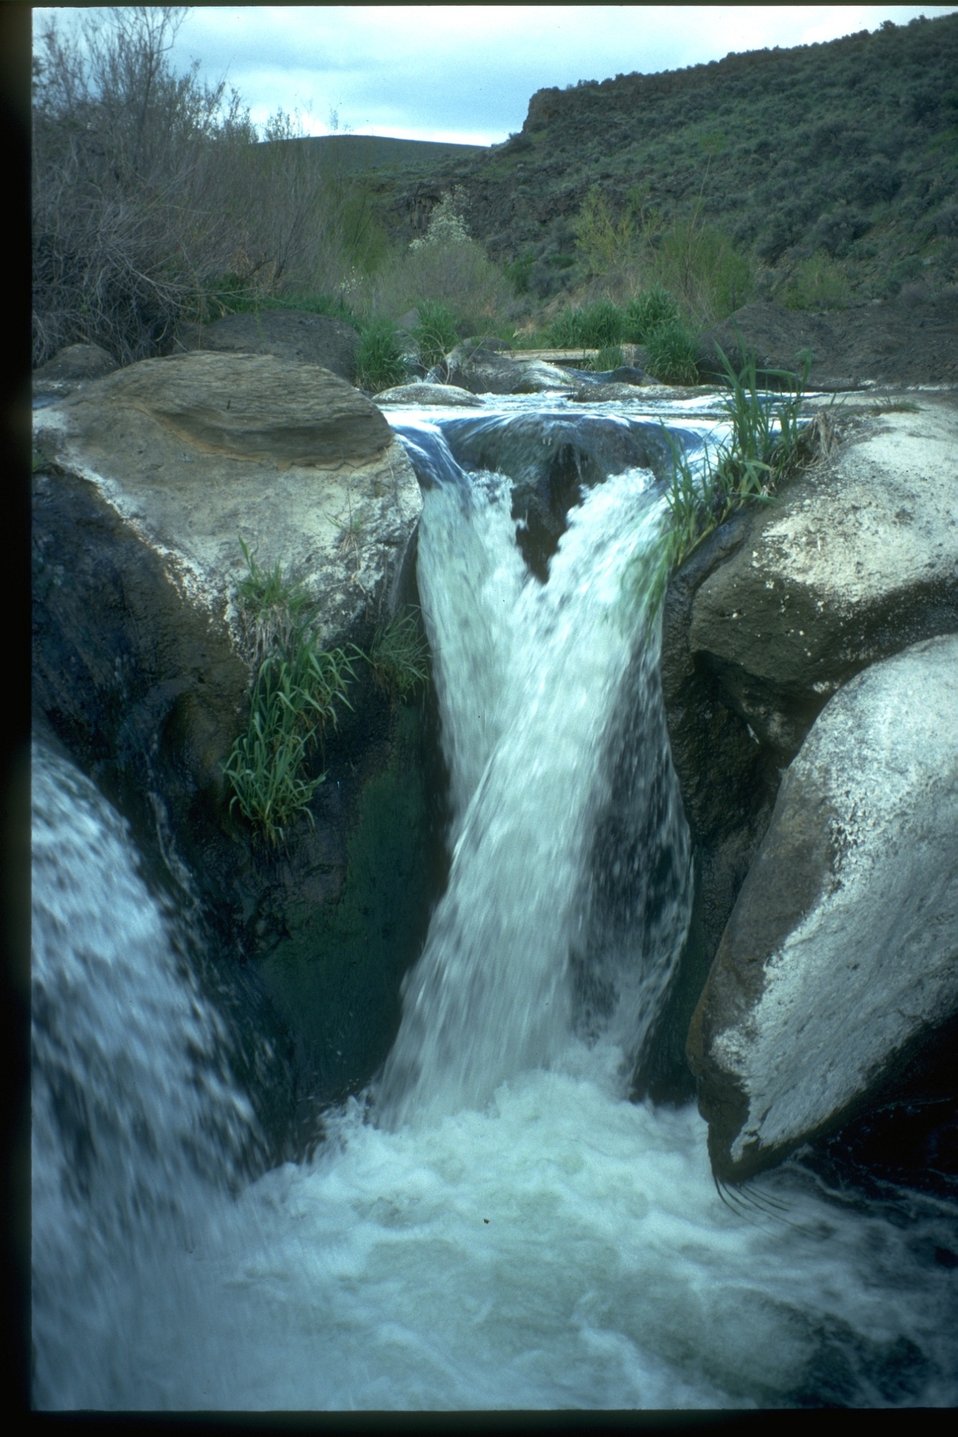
Douglas Creek waterfall in Grant County, WA.